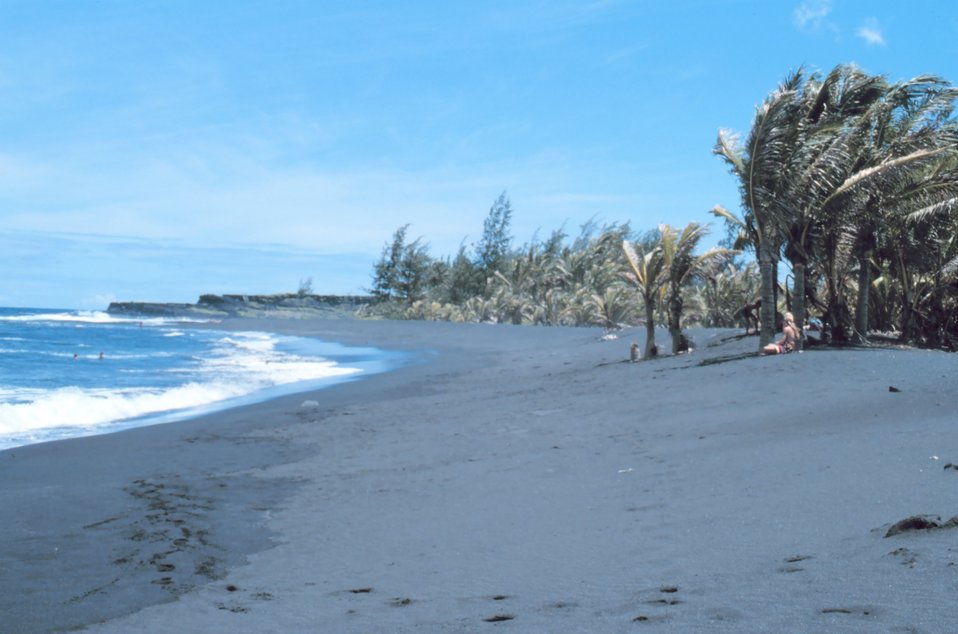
Black lava sand beach known locally as the 'Drainpipe' - now destroyed by lava flow.